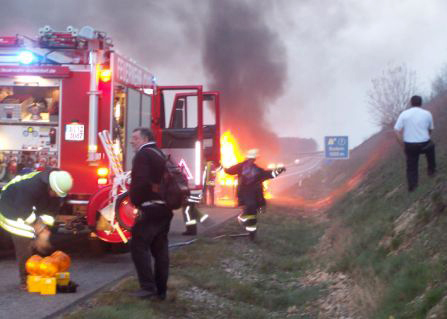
Emergency Response

A local German's car burst into flames on the side of the road.